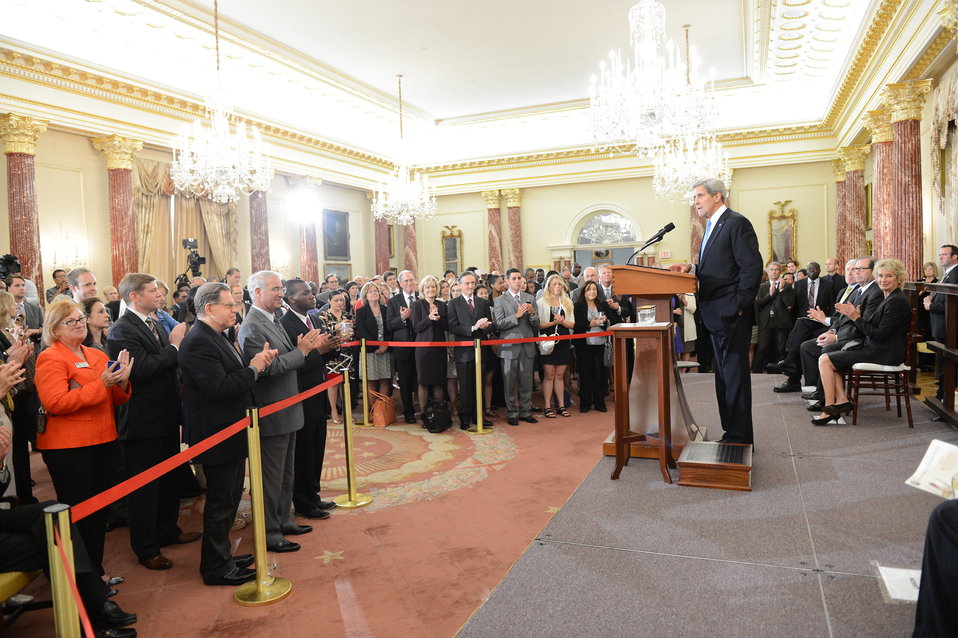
Secretary Kerry Delivers Remarks at the World Food Prize Laureate Announcement Ceremony

U.S. Secretary of State John Kerry delivers remarks at the World Food Prize Laureate Announcement Ceremony at the U.S. Department of State in Washington, D.C., on June 19, 2013.